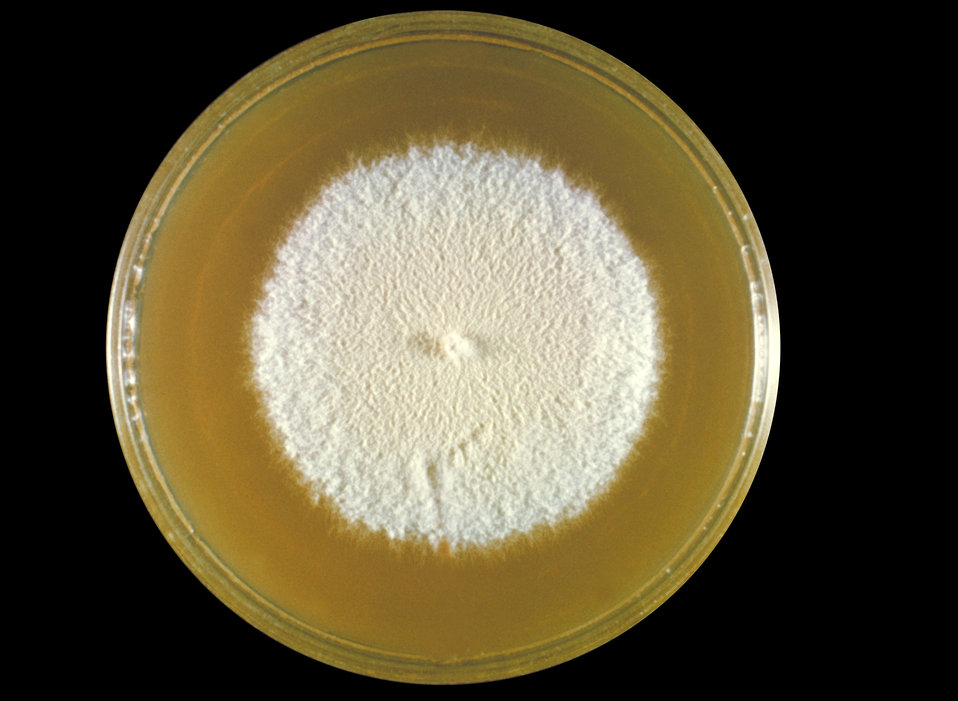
This was a plate culture of the fungus Chrysosporium keratinophilum.